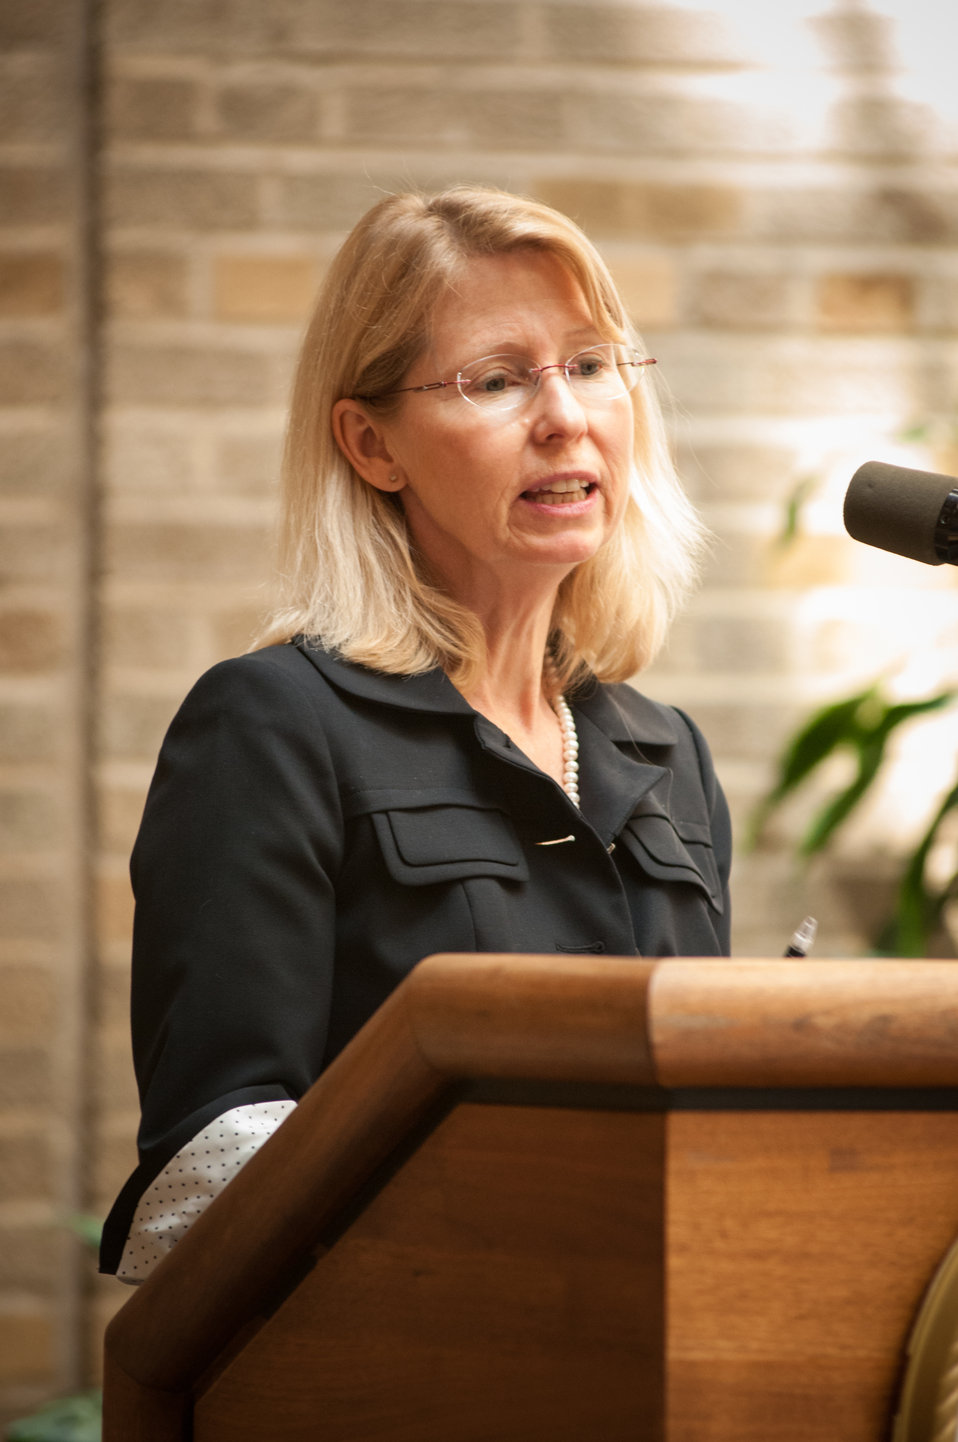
U.S. Department of Agriculture (USDA) Office of the Chief Economist (OCE) Sustainability Director Elise Golan introduces the speakers at the U.S. Food Waste Challenge sponsored by USDA and the Environmental Protection Agency (EPA) at USDA in Washington, D.C. on Tuesday, Jun. 4, 2013. The U.S. Food Waste Challenge is a nationwide effort to reduce, recover and recycle U.S. food waste. Representatives from Gills Onions/Rio Farms, Unilever, Food Marketing Institute, National Restaurant Association, Grocery Manufacturers Association, Food Waste Reduction Alliance, Feeding America and Rock and Wrap It Up! were also present.